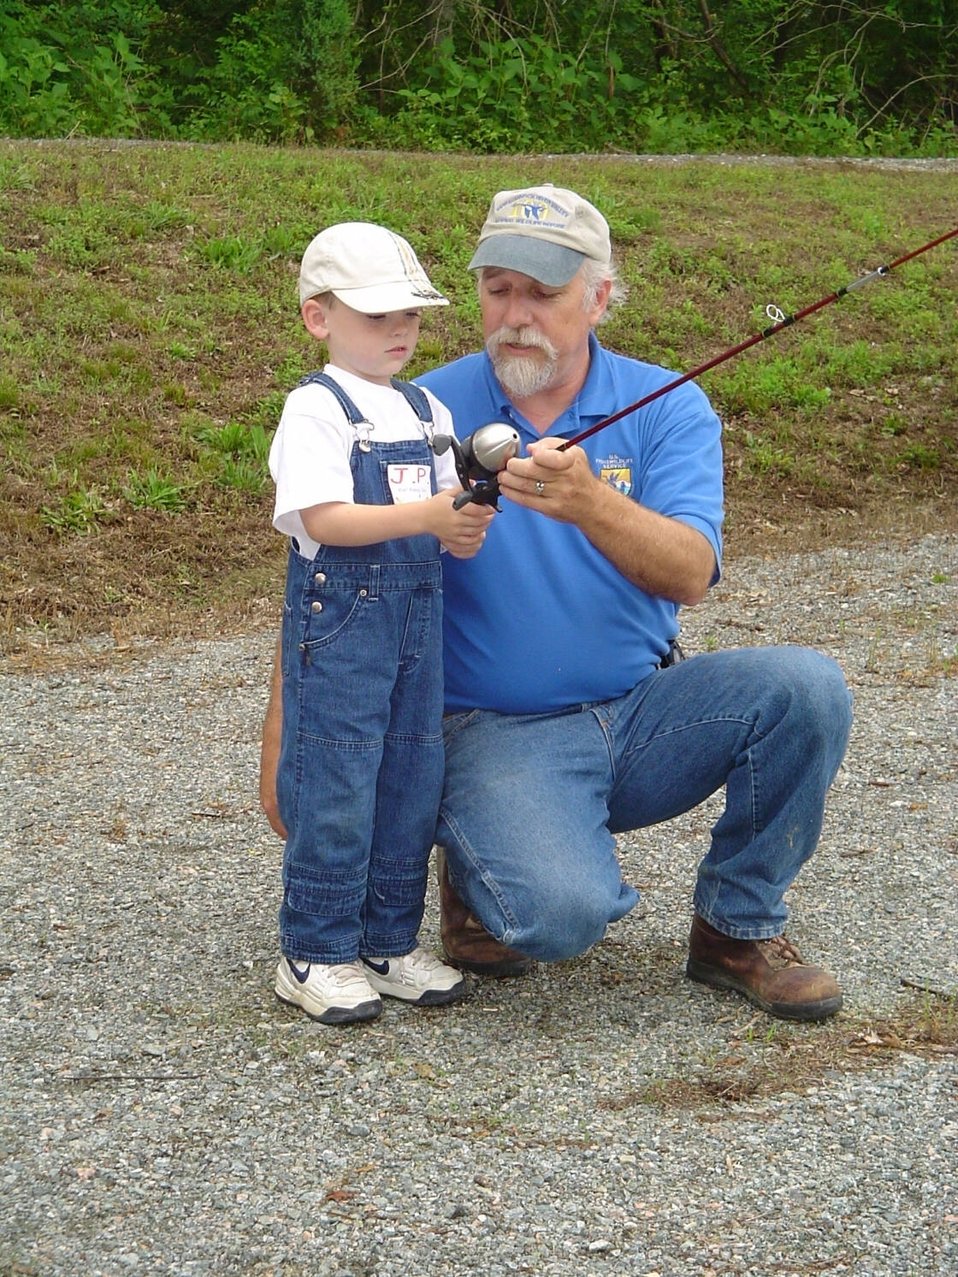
Joe McCauley & J.P. Maupin

Former refuge manager Joe McCauley gives a fishing lesson to J.P. Maupin at Rappahannock River Valley National Wildlife Refuge in Virginia, where McCauley was refuge manager for 10 years. In 2010 McCauley took over as chief of the Service’s Northeast Region Realty Division, which acquires land for the Refuge System. (USFWS)